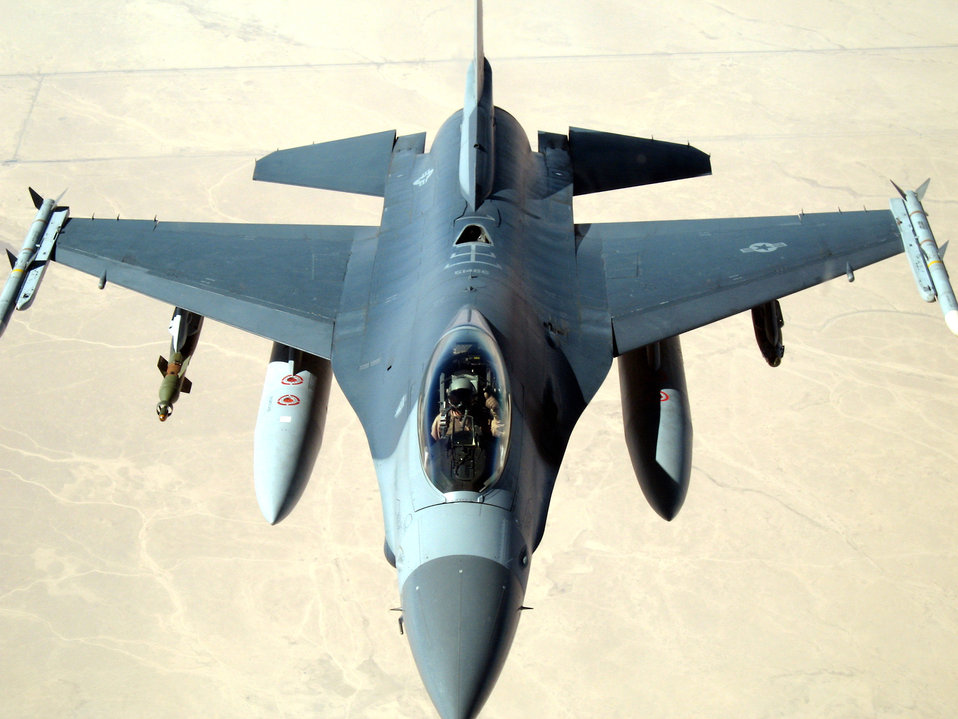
Filling up on freedom

Lt. Col. Gary Middlebrooks gives a